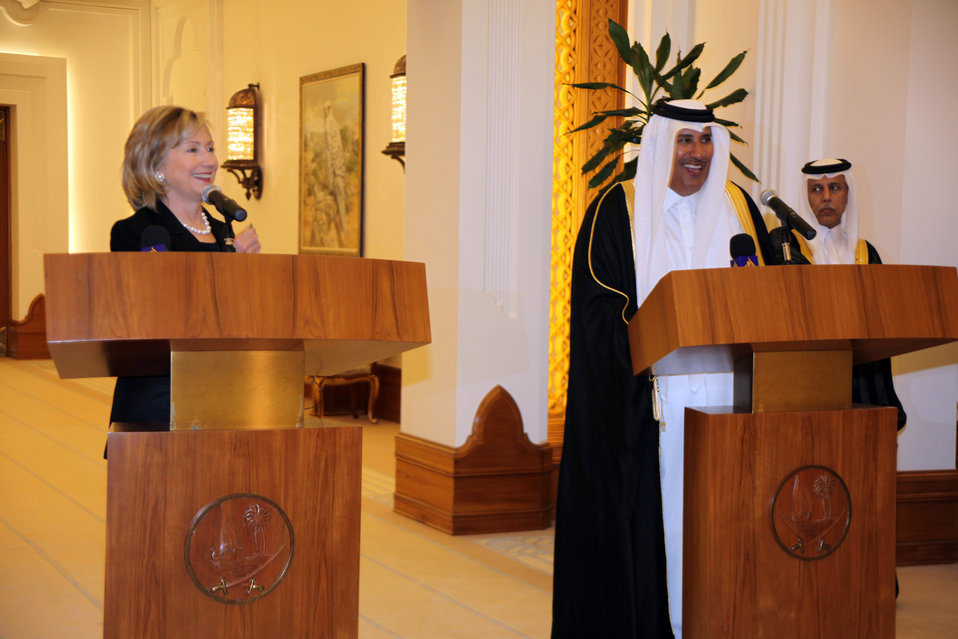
Secretary Clinton Travels to Qatar and Saudi Arabia

U.S. Secretary of State Hillary Rodham Clinton speaks at a press avail with Qatar Prime Minister/Foreign Minister Sheikh Hamad bin Jassim Al Thani in Doha, Qatar February 14, 2010.